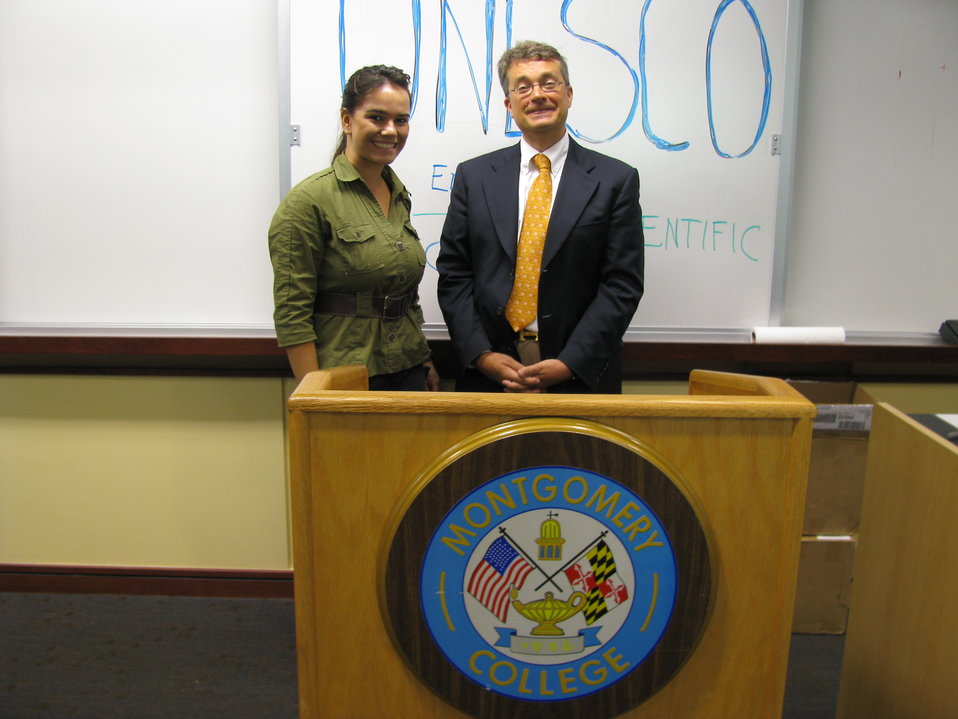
Ambassador Killion Speaks With Montgomery Community College Student Juliana De Moraes-Pinheiro of Brazil

Ambassador David T. Killion, U.S. Permanent Representative to UNESCO, speaks with Montgomery Community College Student Juliana De Moraes-Pinheiro of Brazil at the Takoma Park Campus in Maryland on September 14, 2011.